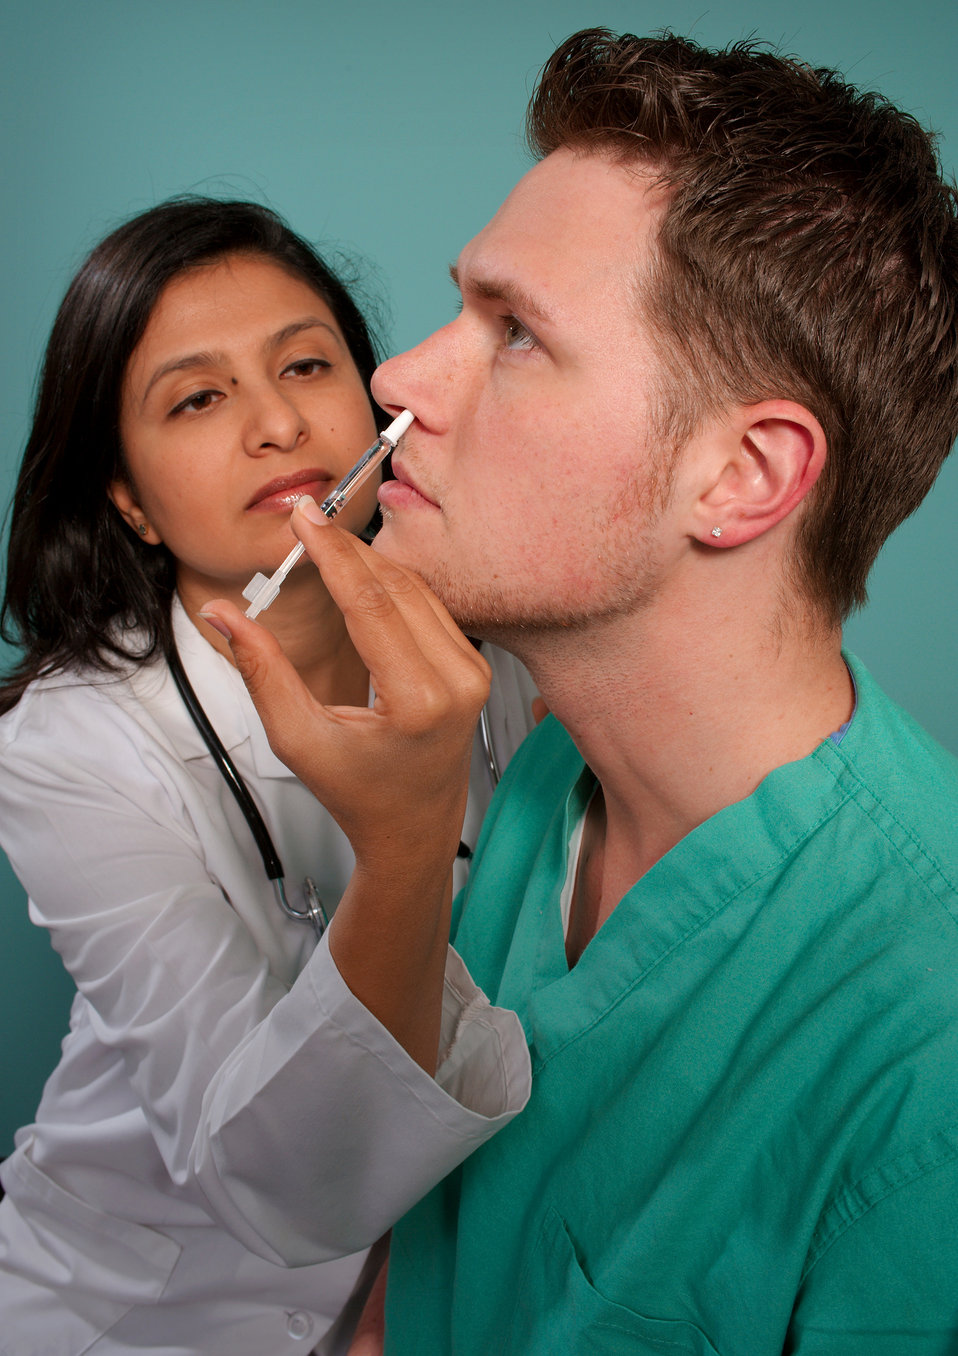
This 2009 image depicts a healthcare practitioner as she was administering the H1N1 live attenuated intranasal vaccine (LAIV) to a male recipient. Using a small syringe, she was delivering the vaccine mist into the man's left nostril.